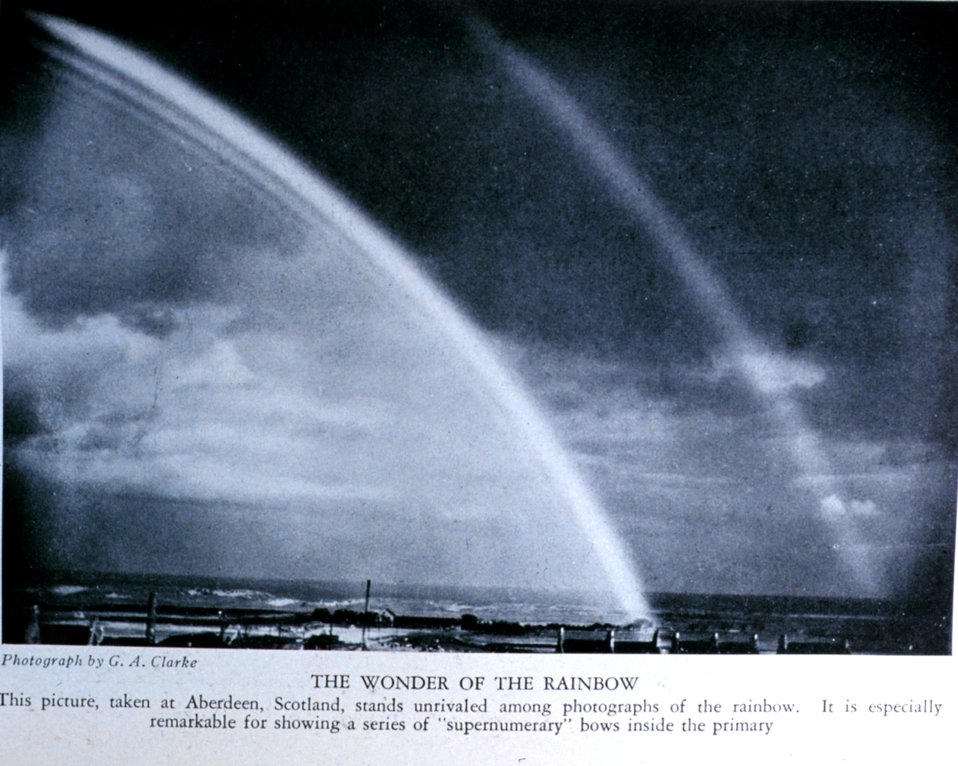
'The Wonder of the Rainbow.' This picture, taken at Aberdeen, Scotland, stands unrivaled among photographs of the rainbow. It is especially remarkable for showing a series of 'supernumerary' bows inside the primary. In: 'A Book about the Weather' by Charles F. Talman, 1931. P. 18.